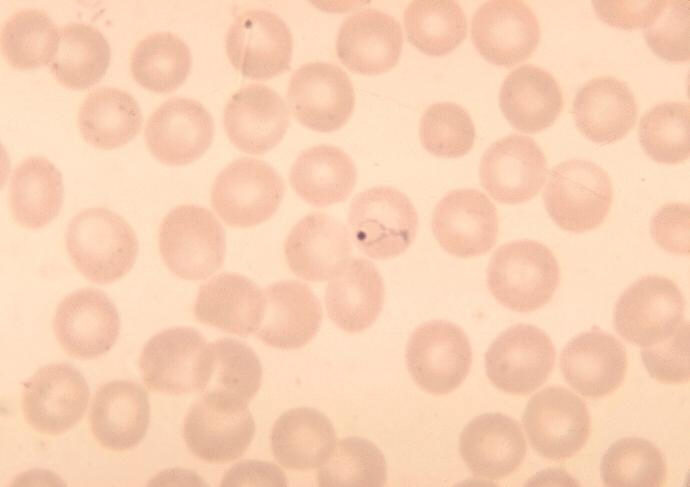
Plasmodium vivax ring.